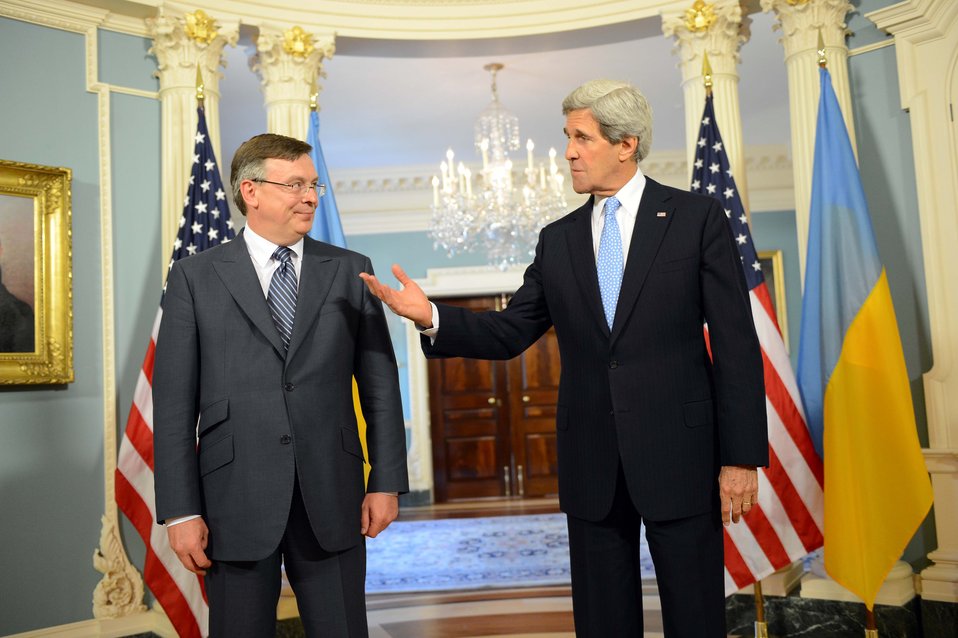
Secretary Kerry Meets With Ukrainian Foreign Minister Kozhara

U.S. Secretary of State John Kerry meets with Ukrainian Foreign Minister Leonid Kozhara at the U.S. Department of State in Washington, D.C., on May 10, 2013.